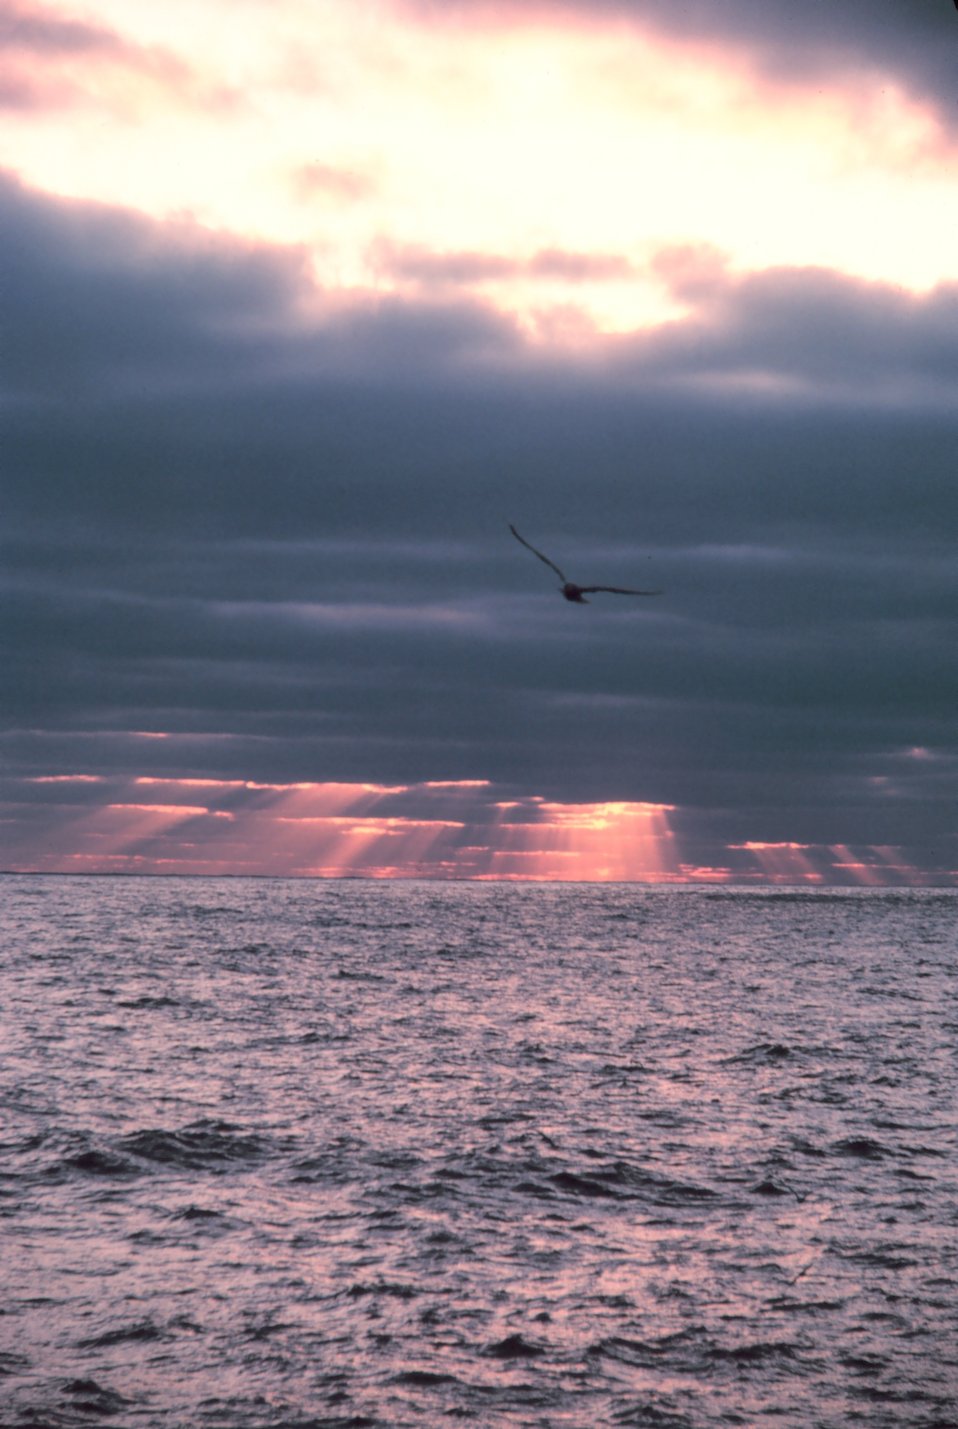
Sunset, seagull and crepuscular rays over the ocean.